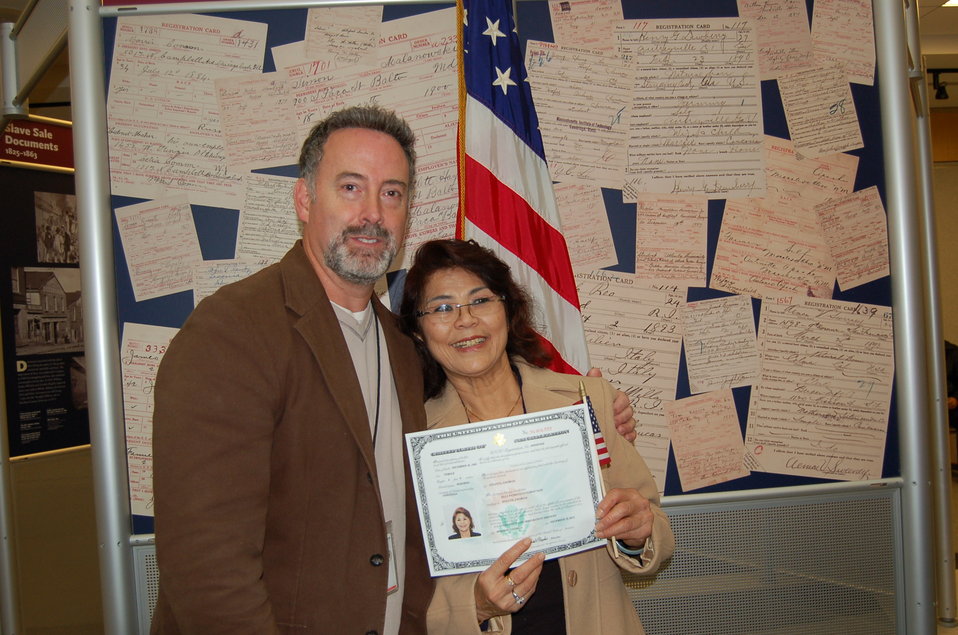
New Citizens